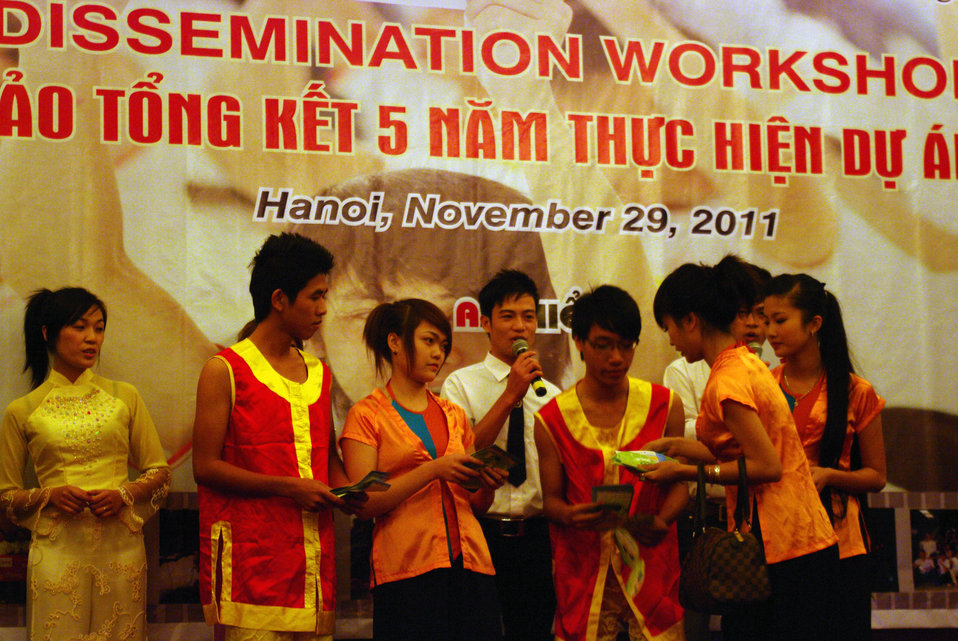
Youth Vocational Training Dissemination